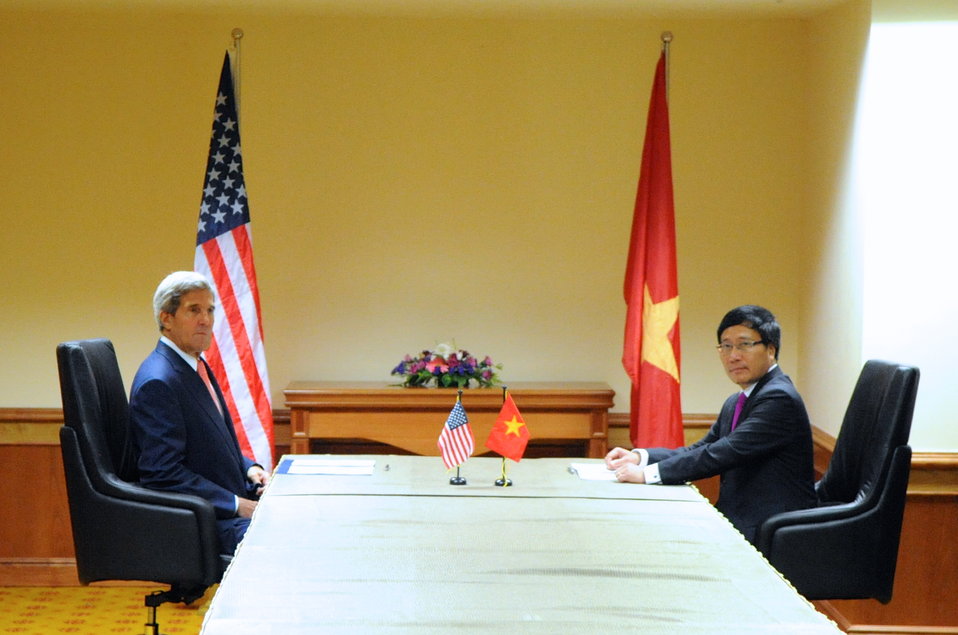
Secretary Kerry, Vietnamese Foreign Minister Minh Prepare To Sign Agreement

U.S. Secretary of State John Kerry and Vietnamese Foreign Minister Pháº¡m Bình Minh prepare to sign a nuclear fuel agreement at the margins of the ASEAN Summit in Bandar Seri Begawan, Brunei, on October 10, 2013.